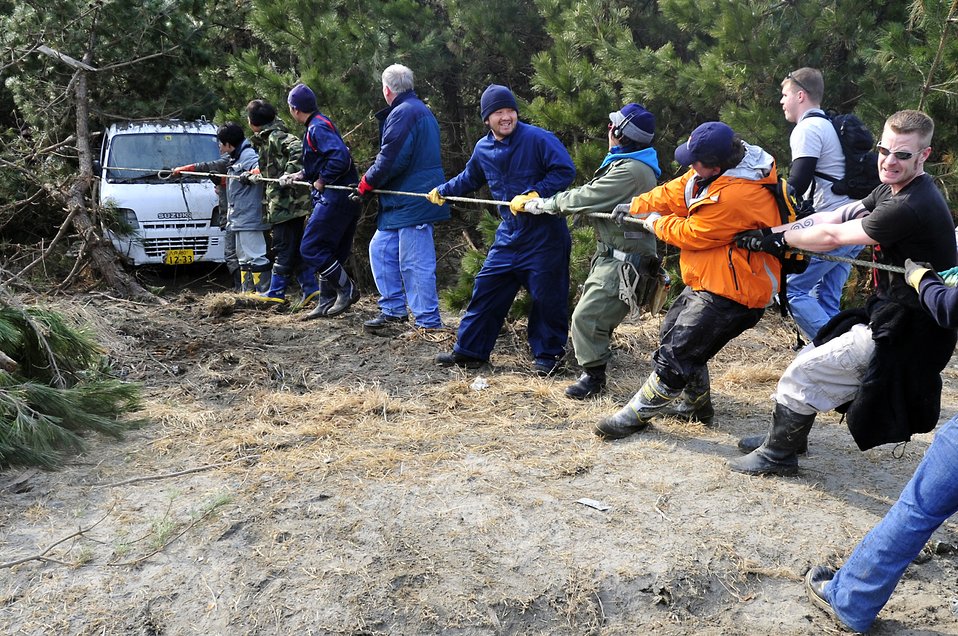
Misawa Air Base coordinates volunteer efforts

MISAWA AIR BASE, Japan - Airmen and Sailors work together with Japanese residents to pull a vehicle out of the tree line at the Misawa City fishing port Mar. 19. A tsunami washed vehicles, trash and debris into the tree line after an earthquake hit northern Japan Mar. 11.